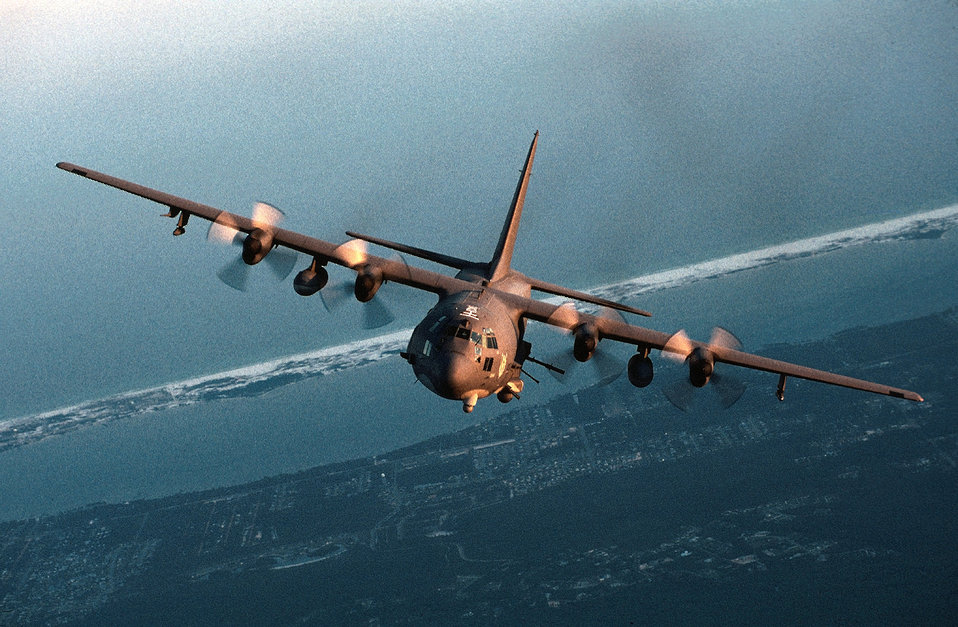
Gunship

FILE PHOTO --The AC-130 gunship's primary missions are close air support, air interdiction and force protection. These heavily armed aircraft incorporate side-firing weapons integrated with sophisticated sensor, navigation and fire control systems to provide surgical firepower or area saturation during extended loiter periods, at night and in adverse weather.